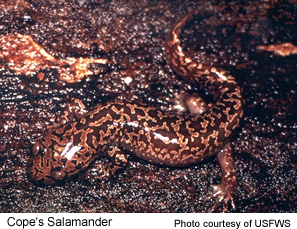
Cope's salamander - Willapa NWR

Salamanders depend on old growth and late-successional forests, both of which can be found at Willapa NWR.